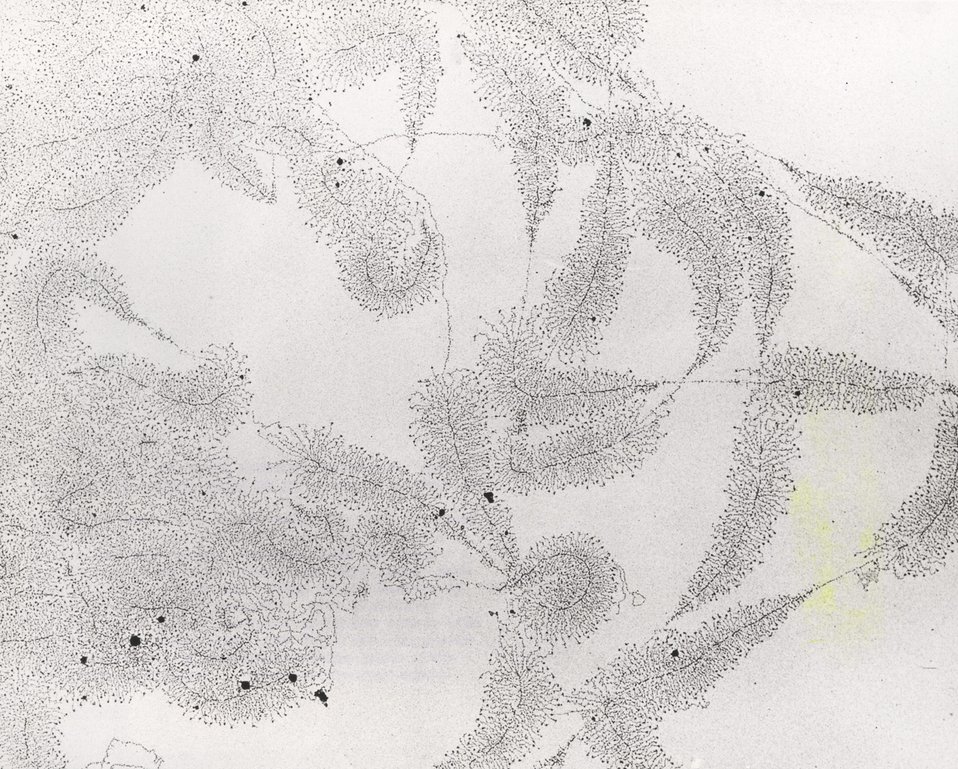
Historic electron microscope photograph of functioning genes shown about 25,000 times actual size. c. 1969